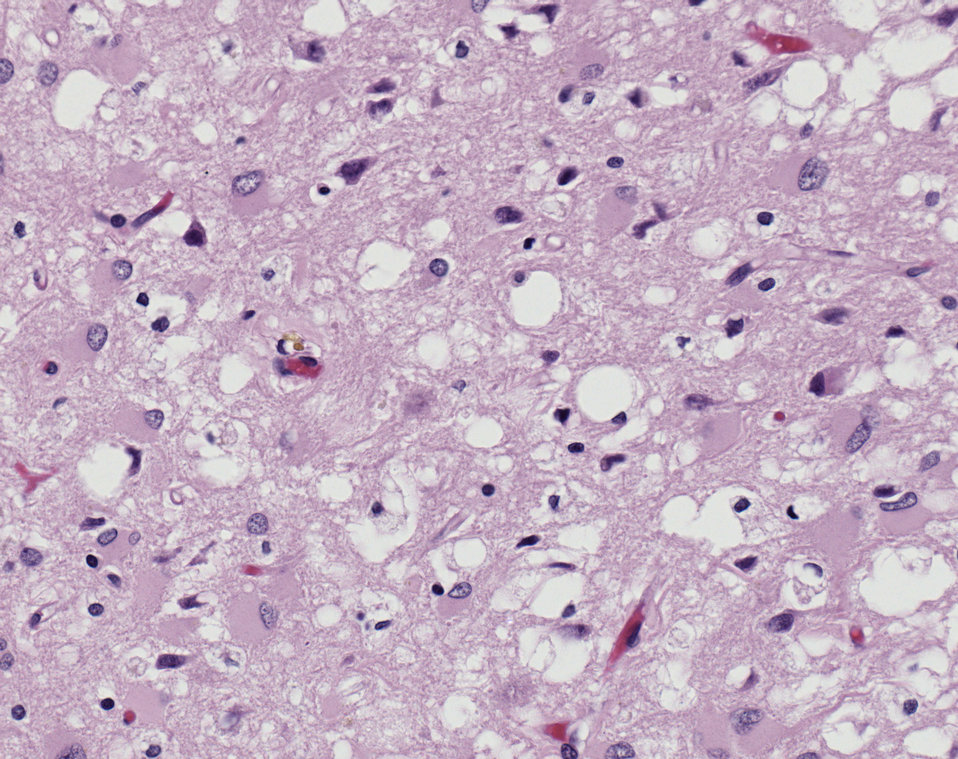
Creutzfeldt-Jakob disease photomicrograph

Magnified 100X, and stained with H&E (hematoxylin and eosin) staining technique, this light photomicrograph of brain tissue reveals the presence of prominent spongiotic changes in the cortex, and loss of neurons in a case of variant Creutzfeldt-Jakob disease (vCJD).